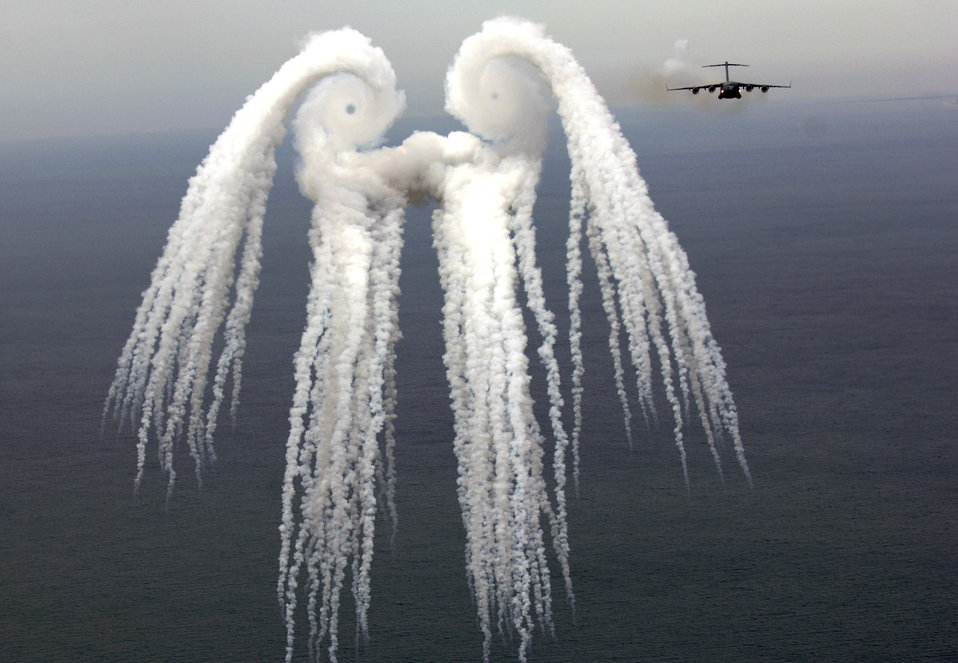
Smoke angel

A C-17 Globemaster III from the 14th Airlift Squadron, Charleston Air Force Base, S.C. flies off after releasing flares over the Atlantic Ocean near Charleston, S.C., during a training mission on Tuesday, May 16, 2006. The